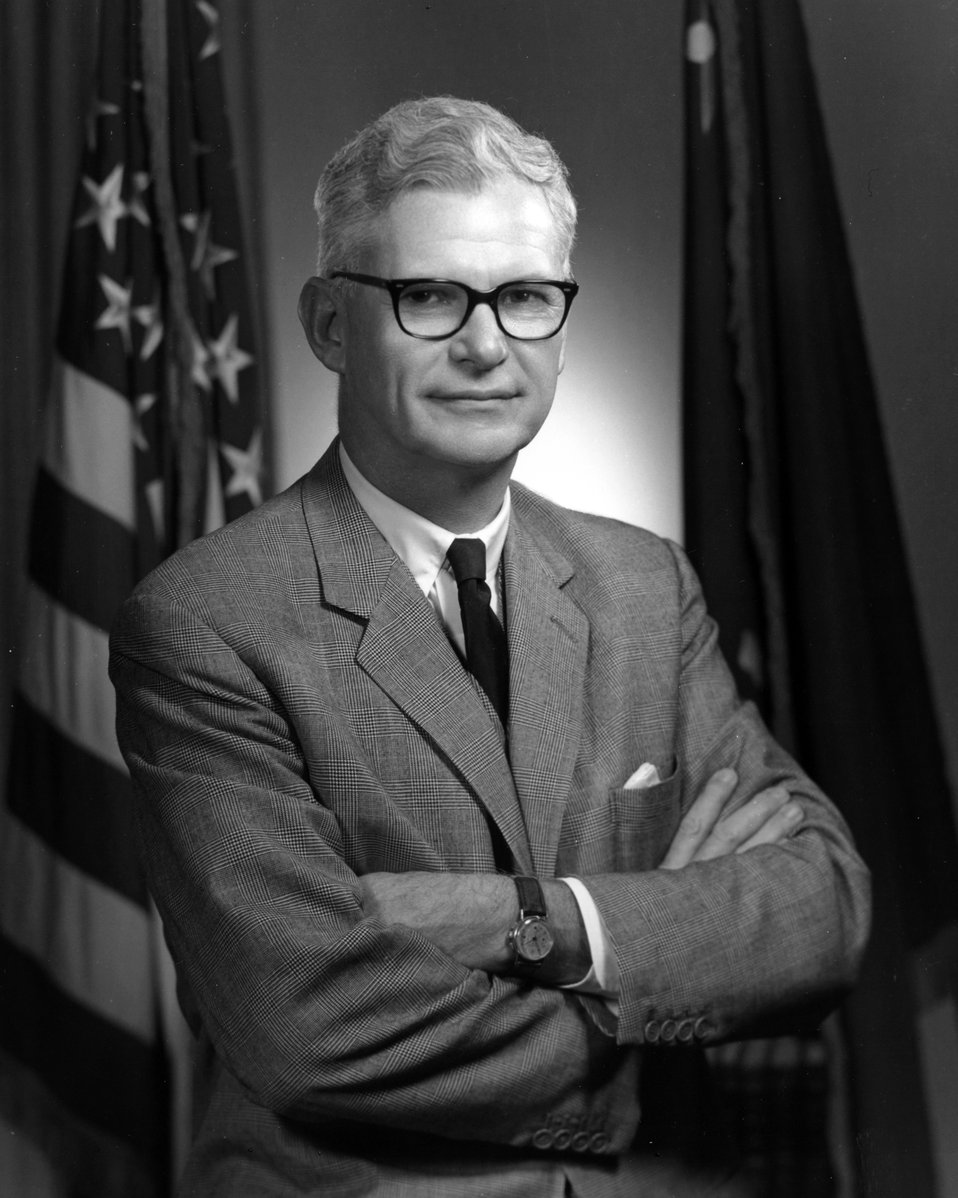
Robert C. Seamans, the ninth Secretary of the Air Force.